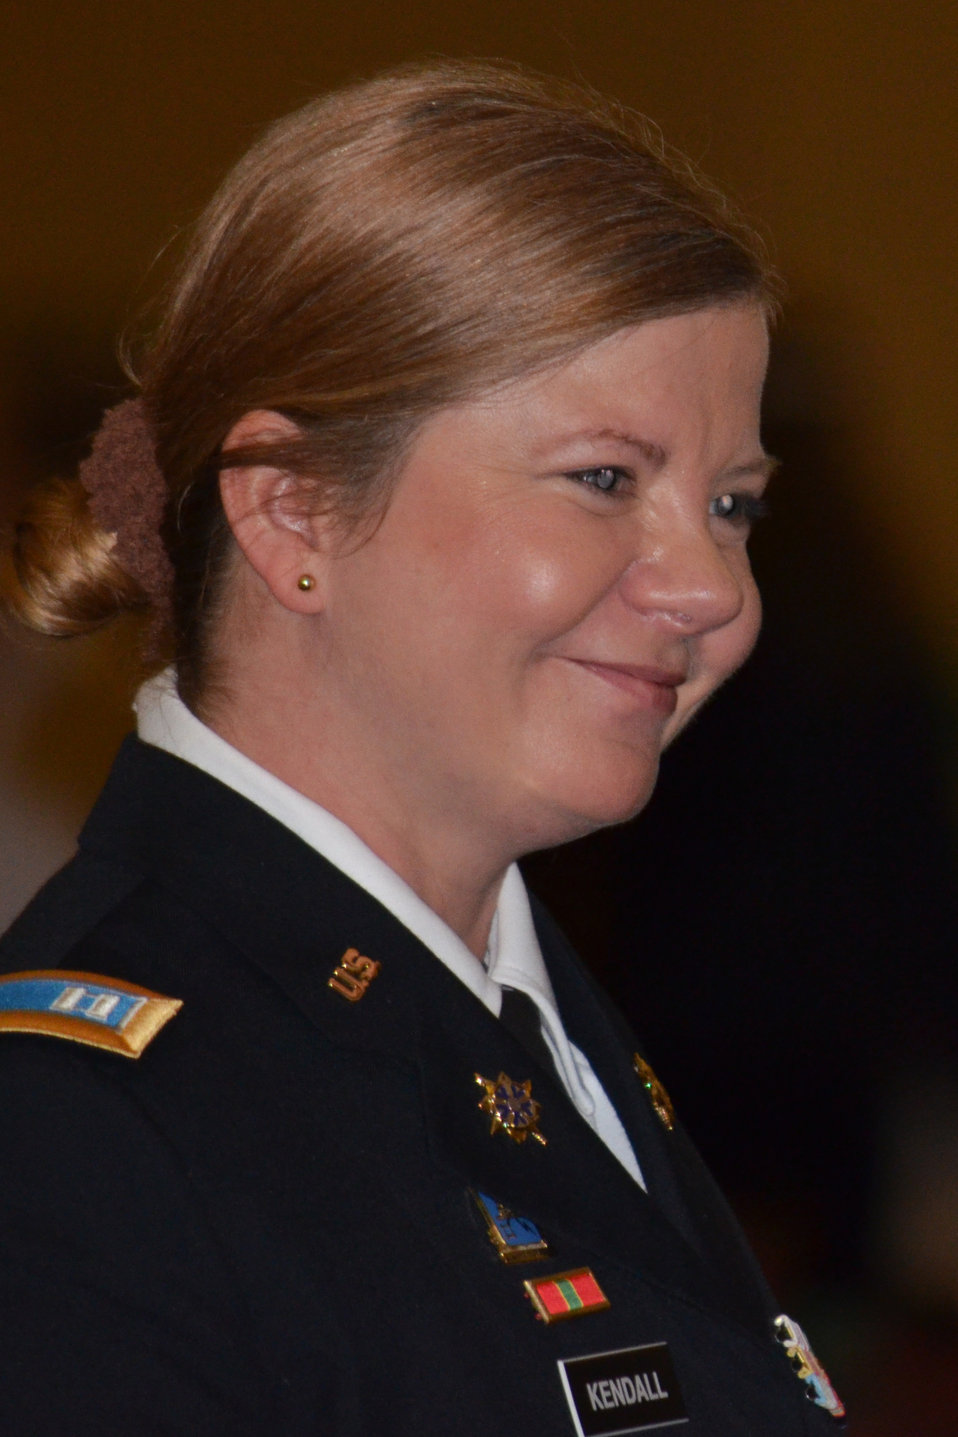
Sacramento District Holiday Party 2011